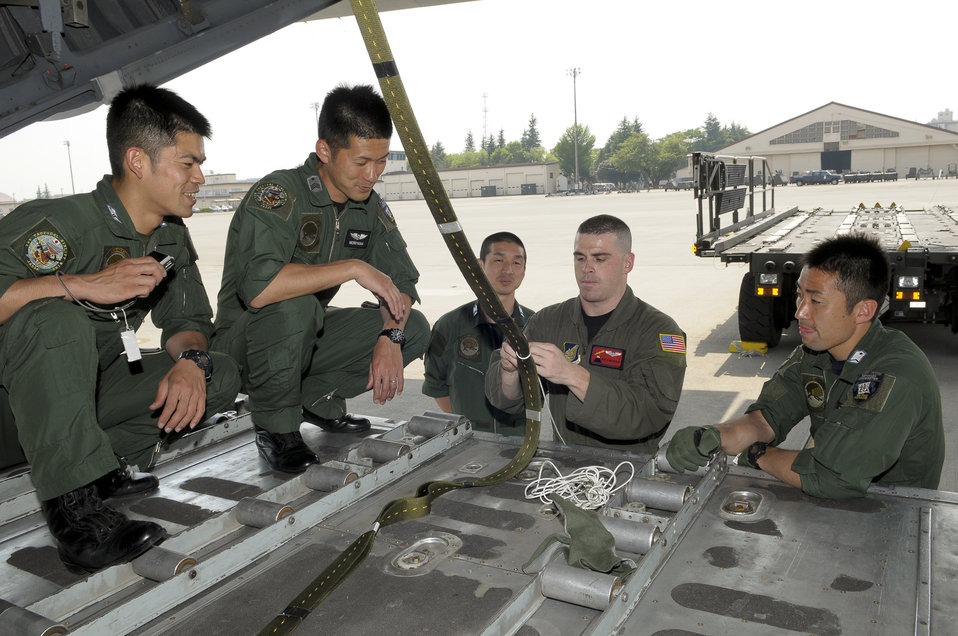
JAI Training

Staff Sgt. Ryan Gossen demonstrates how to properly secure an extraction line during Joint Air Delivery Inspection training May 5, 2010, at Yokota Air Base, Japan. Sergeant Gossen is a 374th Operations Support Squadron loadmaster.